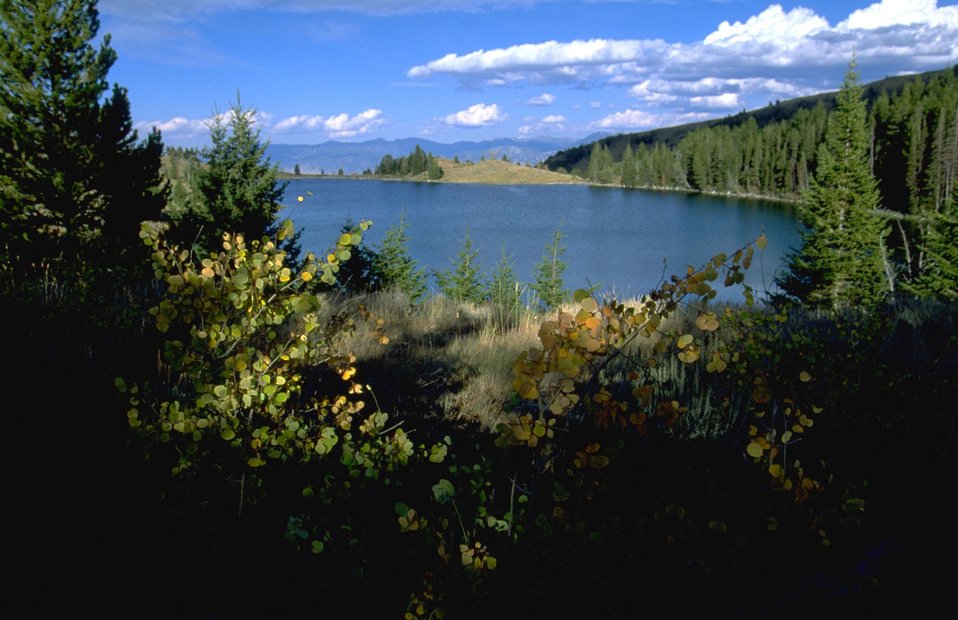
Axolotl Lake near Virginia City